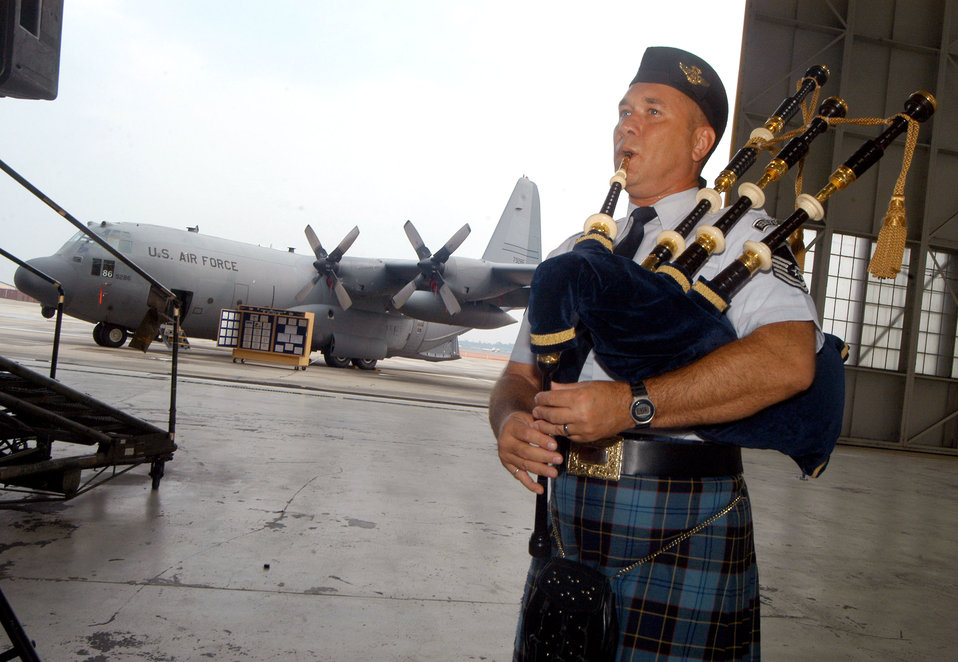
Highly modified C-130 ready for war on terrorism

Master Sgt. Scott Gunn plays the bagpipes at the roll-out ceremony for the MC-130W at Robins Air Force Base, Ga., on Wednesday, June 28. Sergeant Gunn is assigned to the Band of the U.S. Air Force Reserve. The highly modified C-130 will replace special operations aircraft lost in combat.